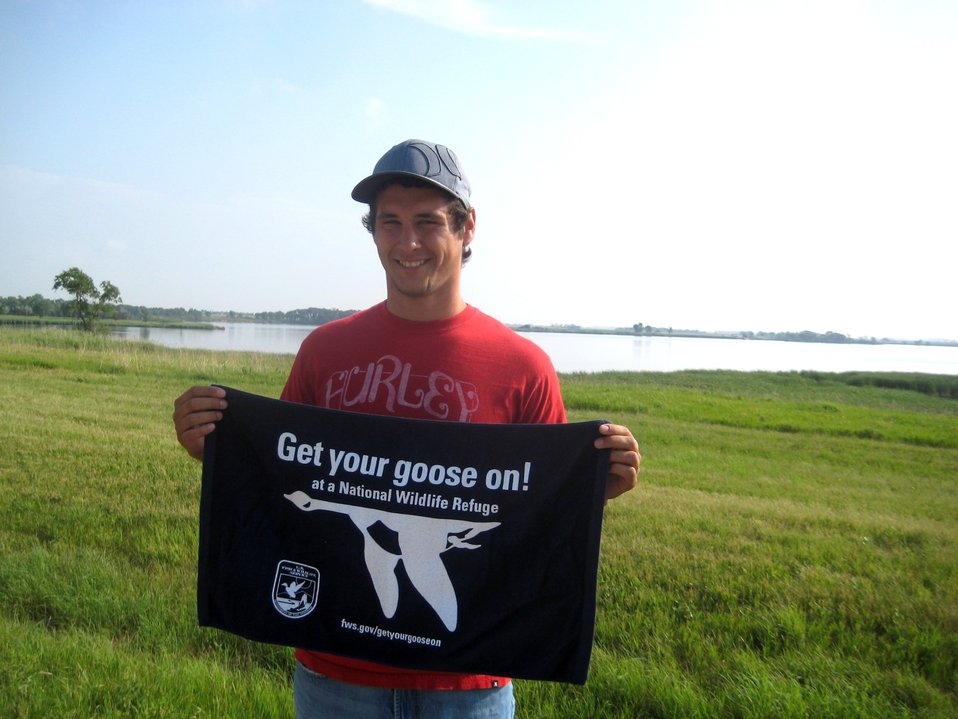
Get Your Goose On!

Taken at Tewaukon National Wildlife Refuge.